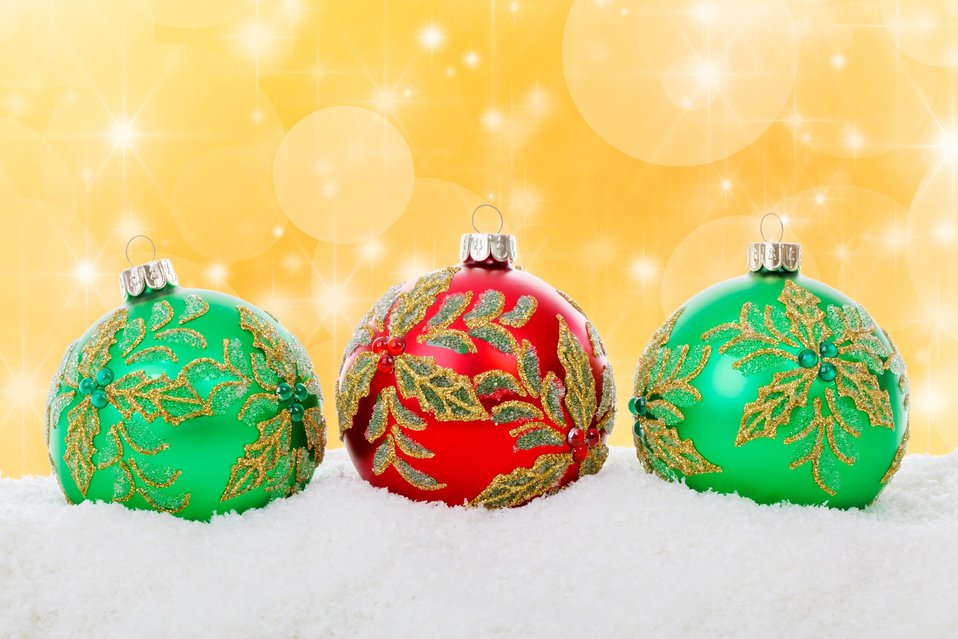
Red green christmas balls

Red and green christmas baubles in snow on golden background.